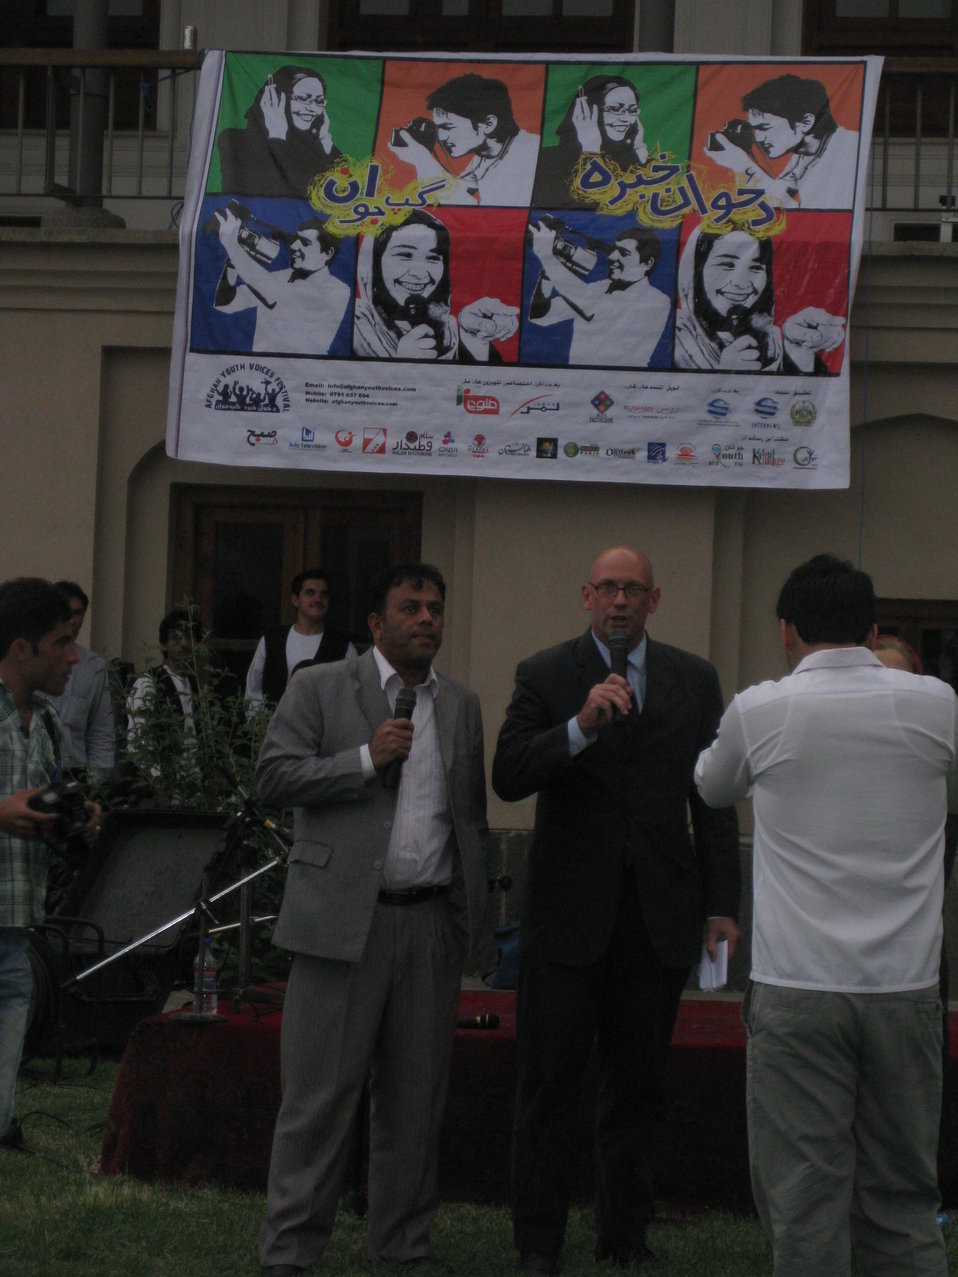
Afghan Youth Voices 115